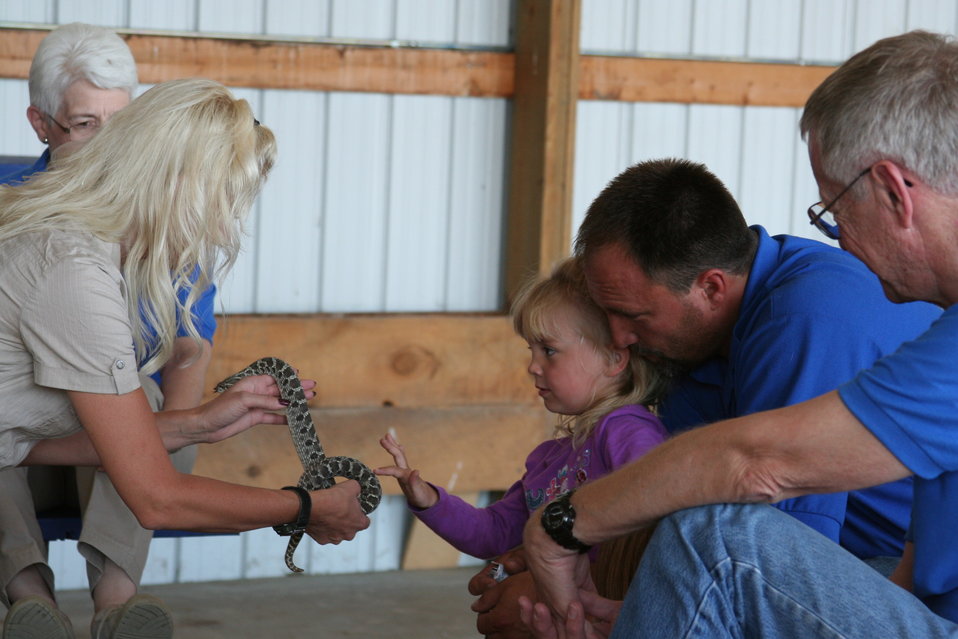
2011 Huron Prairie Fest